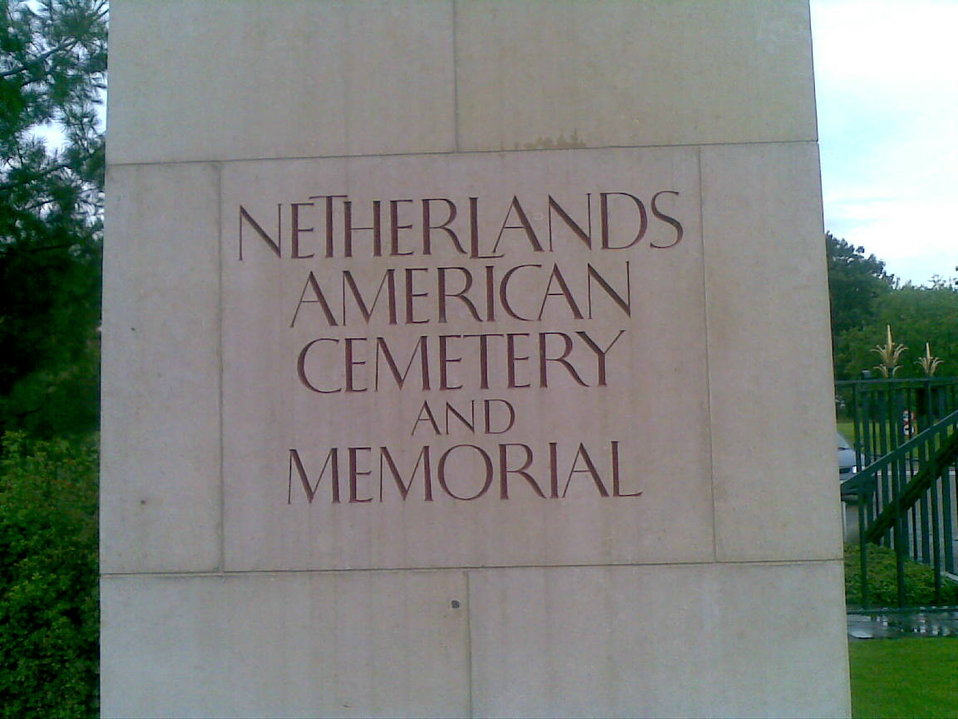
Deutsch: Netherlands American Cemetery, Einfahrt